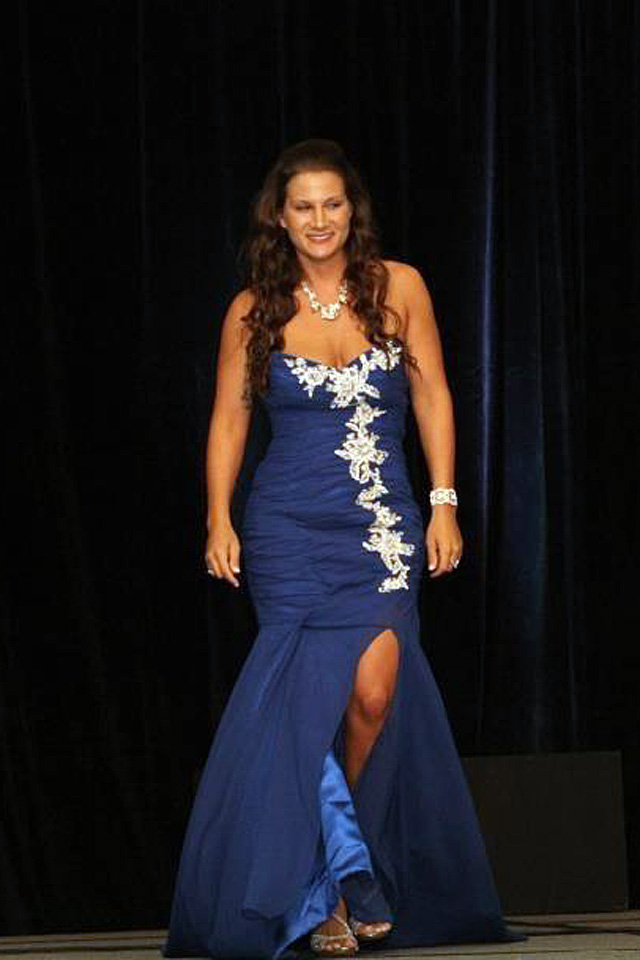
Representing the Air Force

Staff Sgt. Kimberly Miller walks onto the stage at the Ms. Veteran America competition in Arlington, Va., Oct. 7, 2012. Miller is a military training instructor at Joint Base San Antonio-Lackland, Texas, and competed in the first pageant for women in uniform.